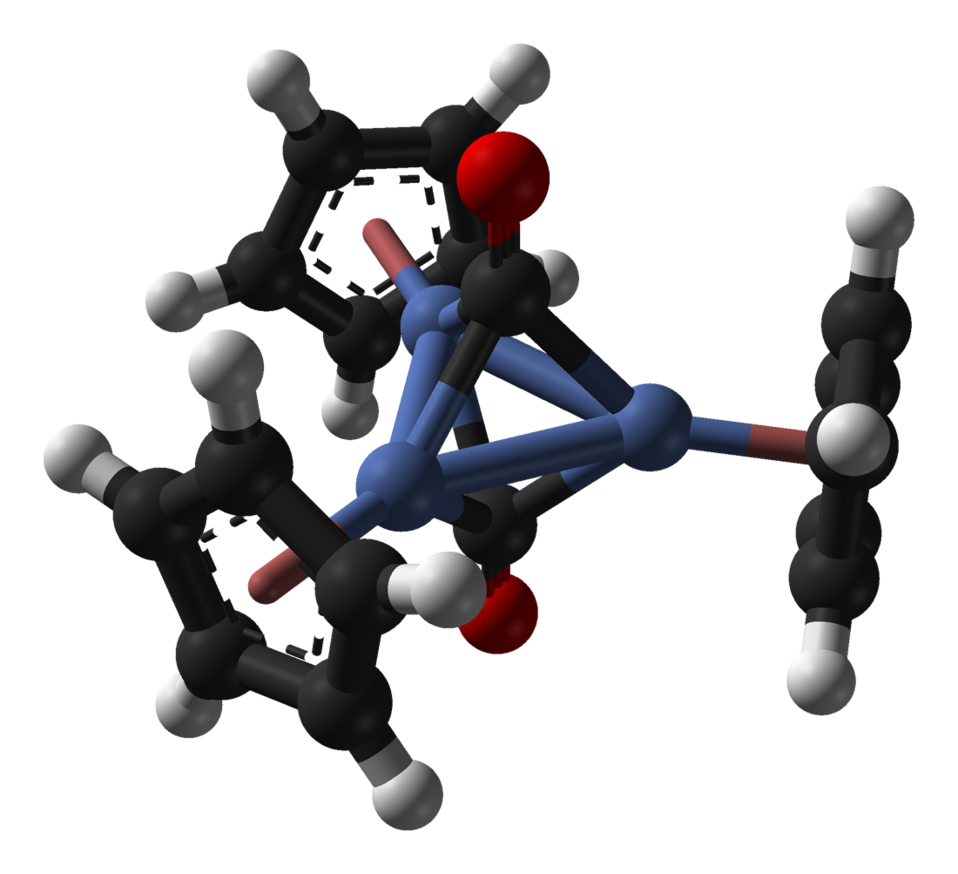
Ball-and-stick model of the bis(μ3-carbonyl)-tris(η5-cyclopentadienyl)trinickel anion, [(CpNi)3(CO)2]−, from the crystal structure. Crystal structure by X-ray diffraction from J. Am. Chem. Soc. (1982) 104, 3054–3063. Model constructed in CrystalMaker 8.1. Image generated in Accelrys DS Visualizer.